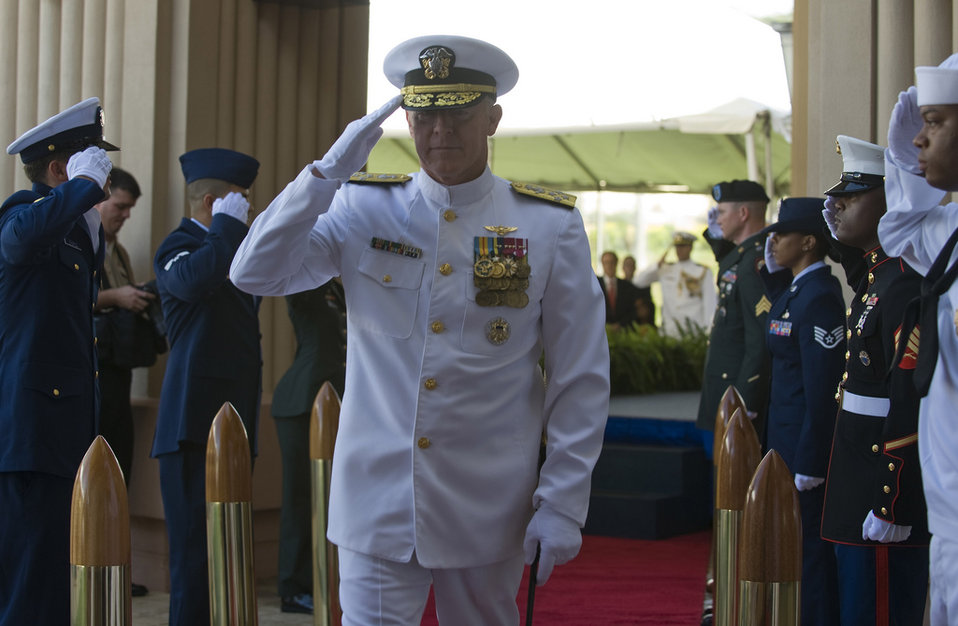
PACOM change of command

Adm. Robert F. Willard, incoming commander of U.S. Pacific Command, renders a salute as he passes through side boys during the U.S. PaCom change of command ceremony Oct. 19, 2009, at Camp H.M. Smith, Hawaii. Admiral Willard, former U.S. Pacific Fleet commander, assumed command of U.S. PaCom from Adm. Timothy J. Keating during the ceremony.